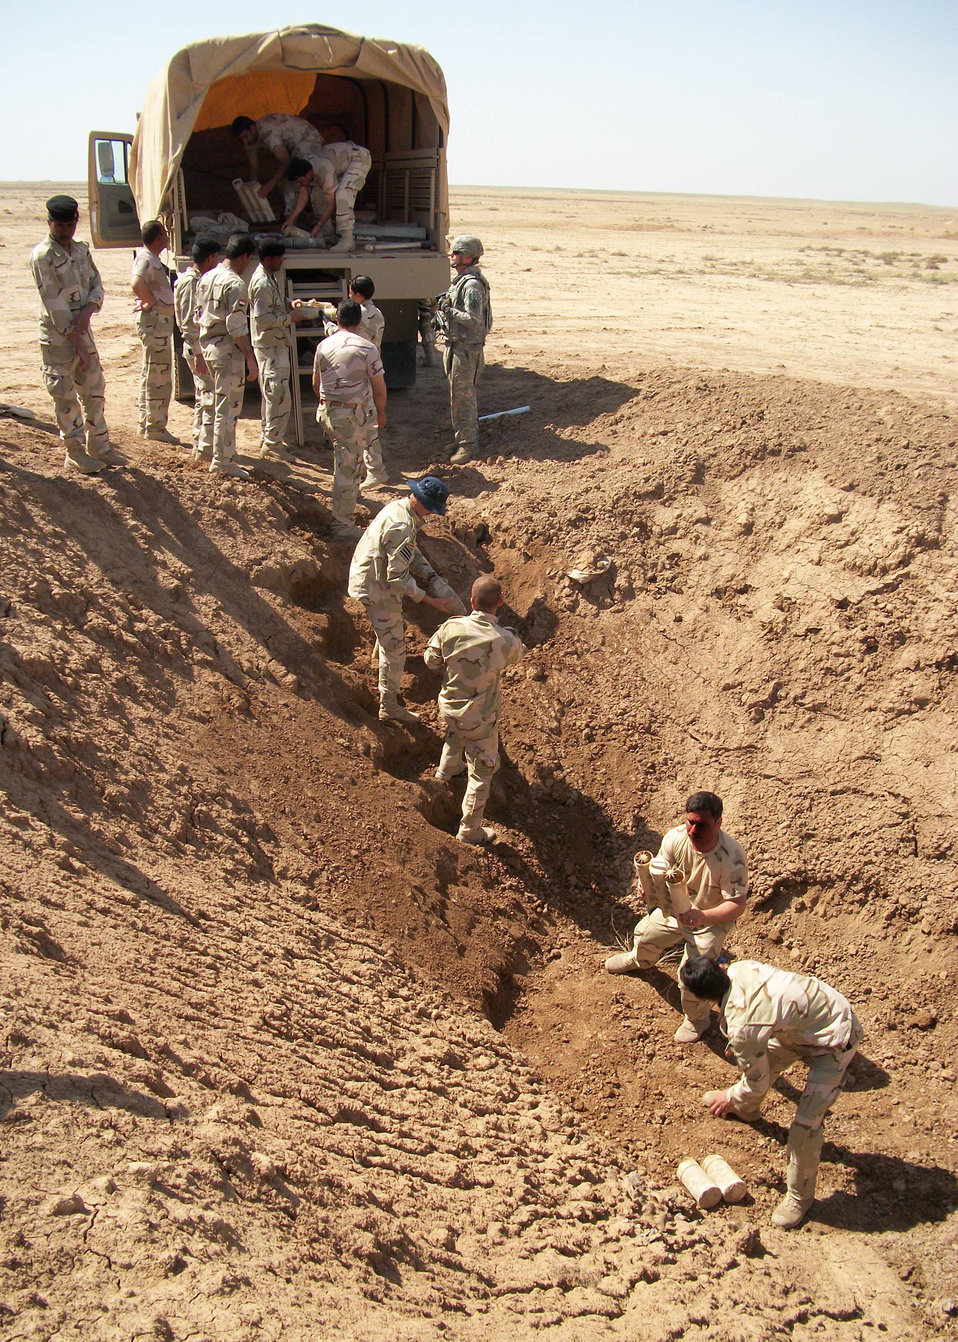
Iraqi air force EOD training

321st Expeditionary Operation Support Squadron Explosive Ordnance Disposal team members and Iraqi airmen build a mound of munitions and unexploded ordnances for a detonation April 28, 2011, at Contingency Operating Site Warrior in Iraq.